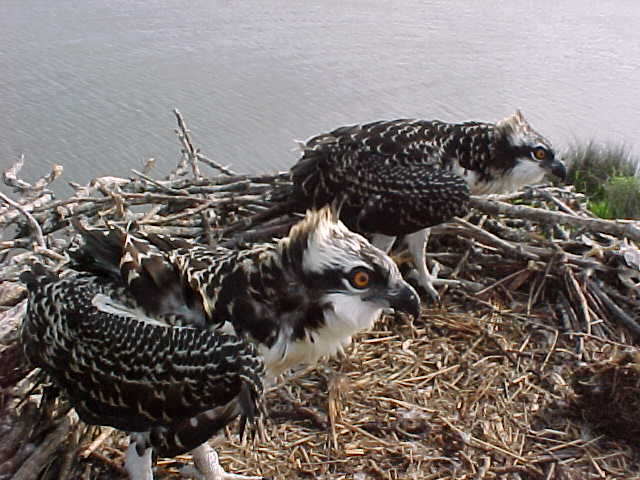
ospreys

Juvenile ospreys in the nest
Back Bay National Wildlife Refuge, VA